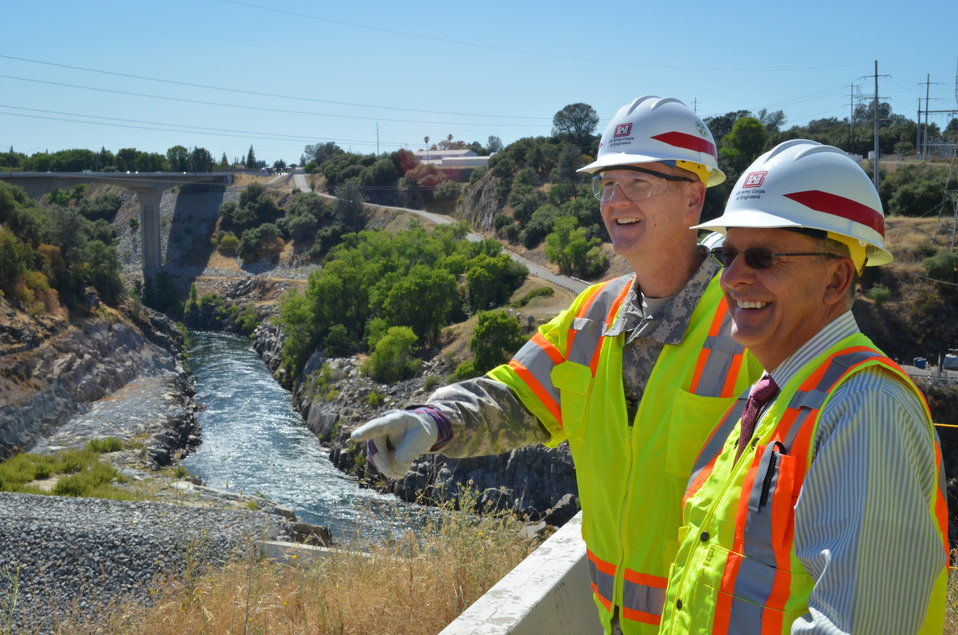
Col. Michael Farrell shares a lighter moment with David Thomas

Col. Michael Farrell (left), incoming commander for the U.S. Army Corps of Engineers Sacramento District, shares a lighter moment with David Thomas, director for the district's Folsom Dam auxiliary spillway project in Folsom, Calif., during a tour of the construction site June 17, 2013. The new spillway’s control structure is currently under construction, and will work in conjunction with the main dam to release water from the reservoir during large storms.